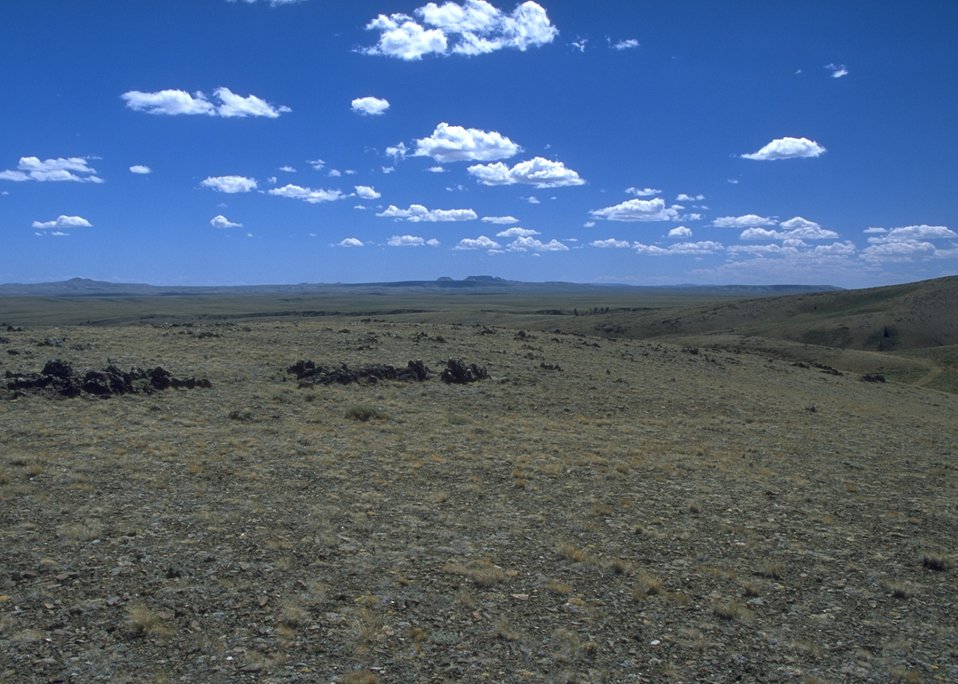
Continental Divide Trail with Oregon Buttes (right) and Continental Divide Peak (left) in background, Lander Field Office.